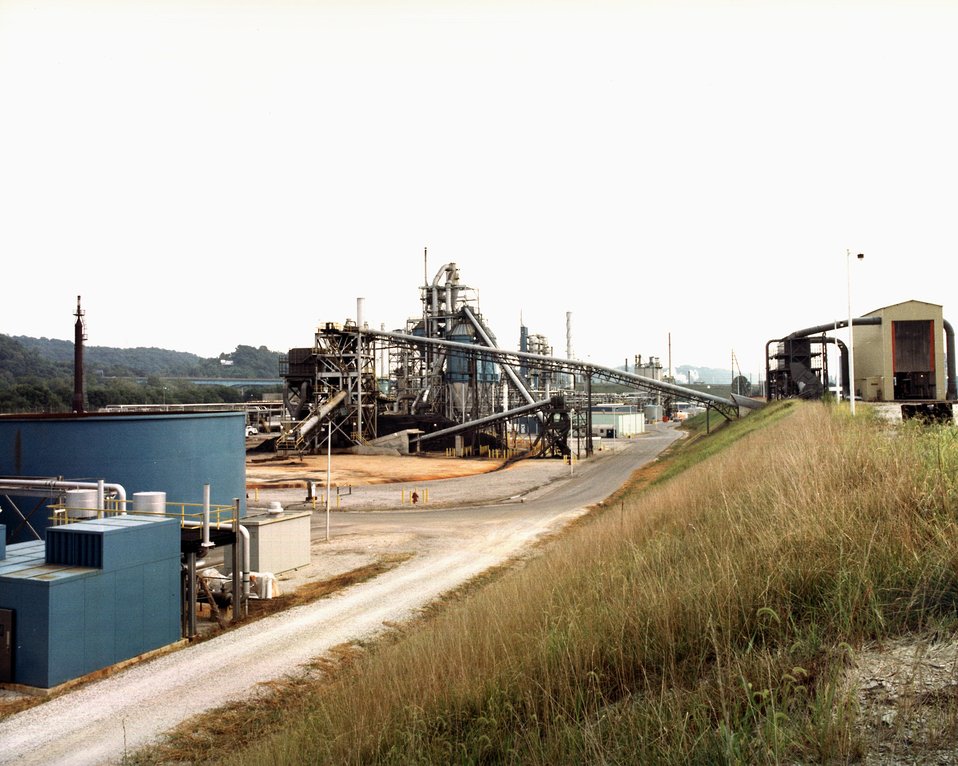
VIEW OF THE H-COAL PILOT PLANT AT ABOUT 95 PERCENT COMPLETE.